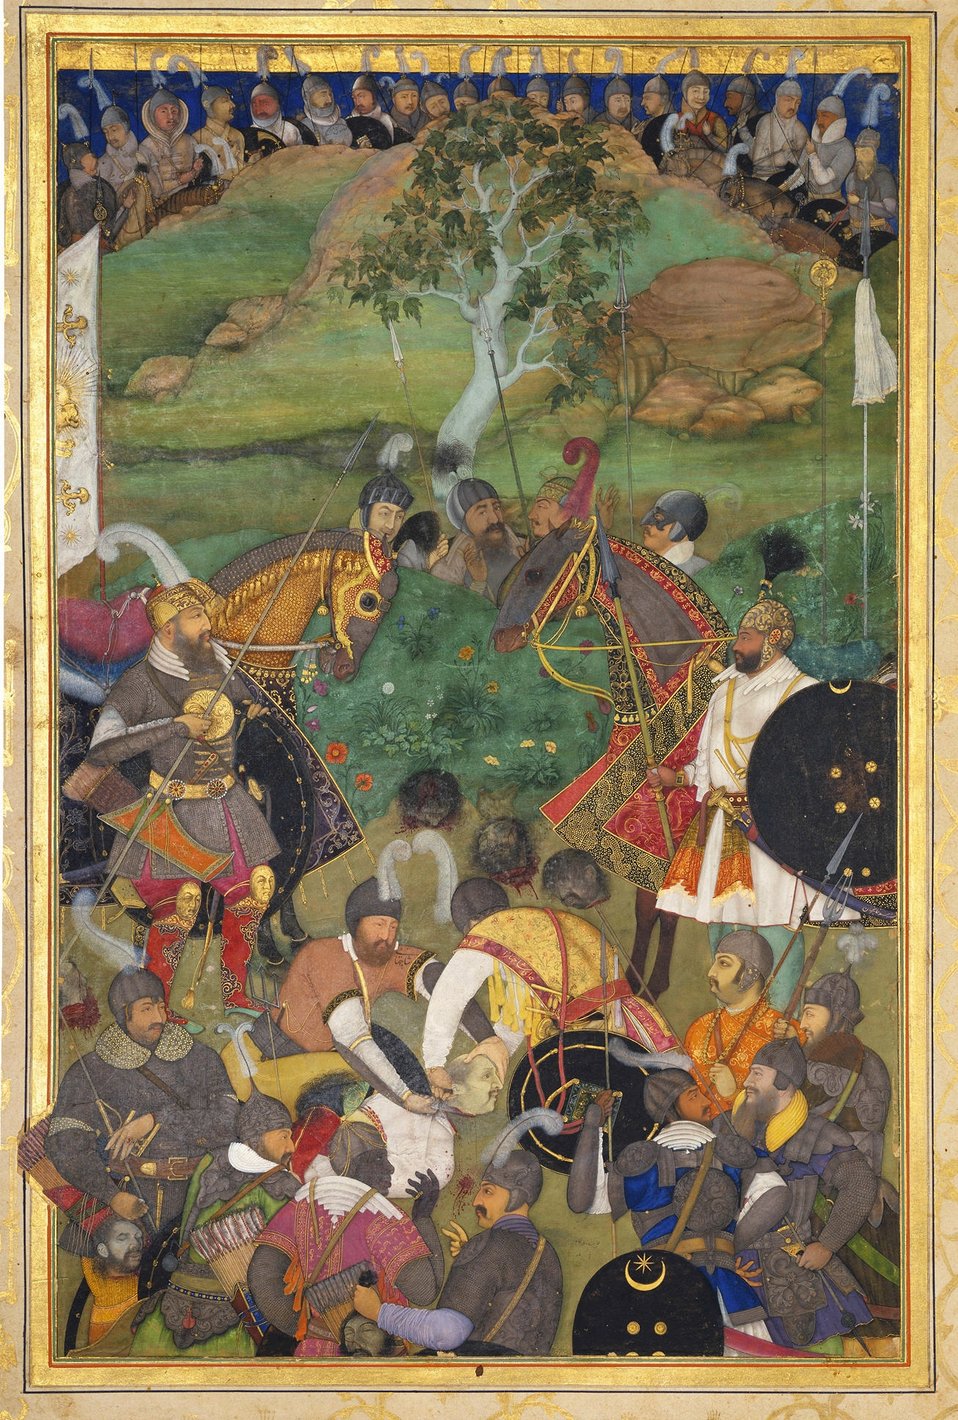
'Abid. The Death of Khan Jahan Lodi. Page from the Windsor Padshahnama, fol. 94v, Date ca. 1633, The Royal Library, Windsor Castle